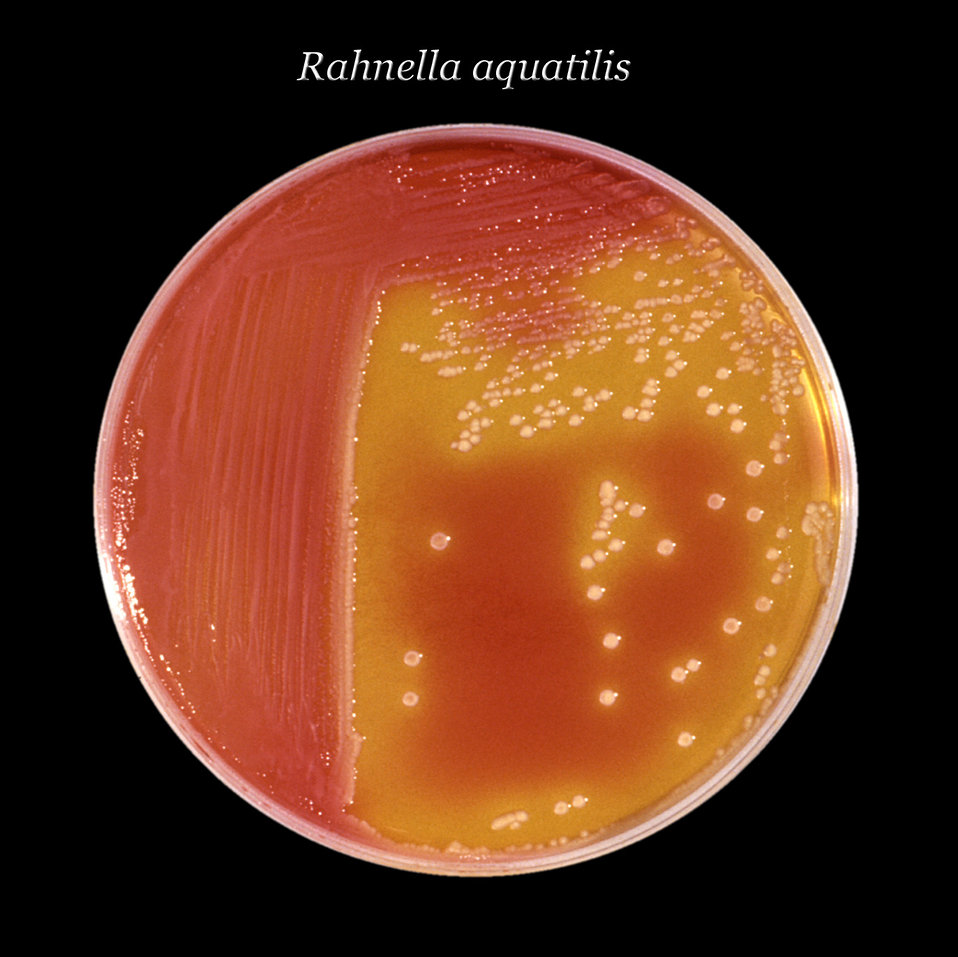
After 24 hours, this inoculated XLD agar culture plate cultivated colonial growth of Gram-negative, rod-shaped and facultatively anaerobic Rahnella aquatilis bacteria.